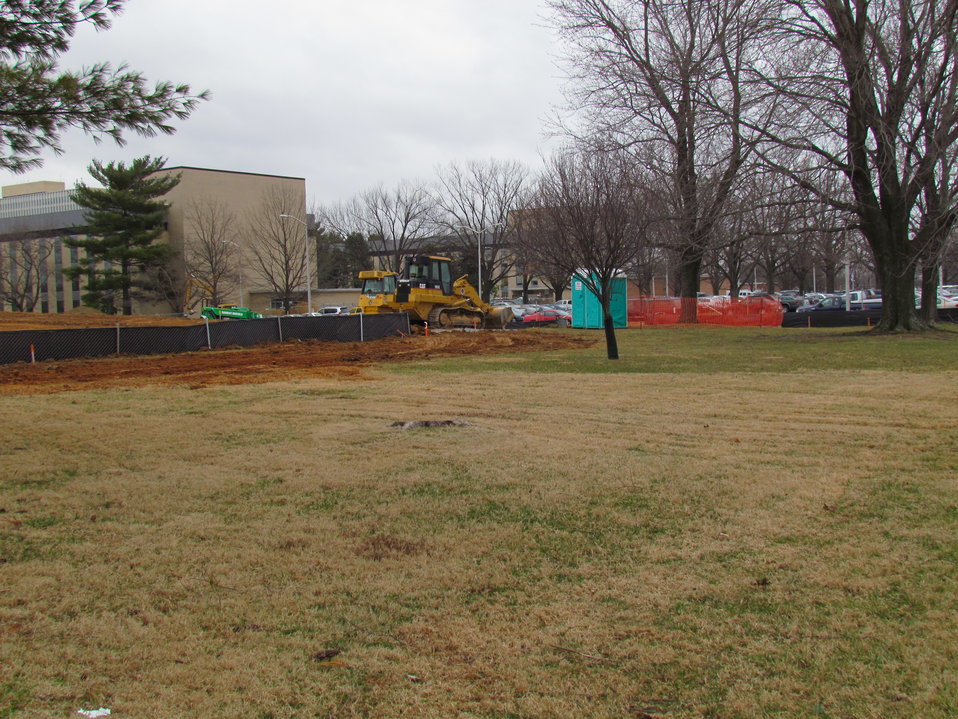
Net-Zero Energy Residential Test Facility - Photo showing location of facility. Building in background is Building 226.